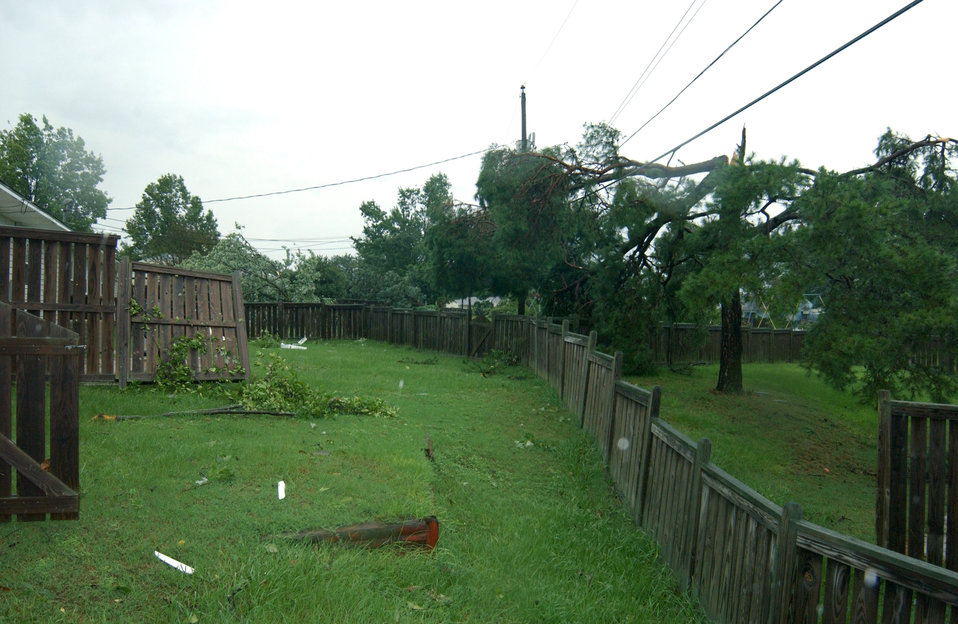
Tornado blows through Shaw

SHAW AIR FORCE BASE, S.C. -- A tornado with winds at about 103 mph damaged homes, power lines, trees and vehicles here Sept. 7. Multiple tornados stemming from Hurricane Frances touched down throughout the state. No one on base was injured.